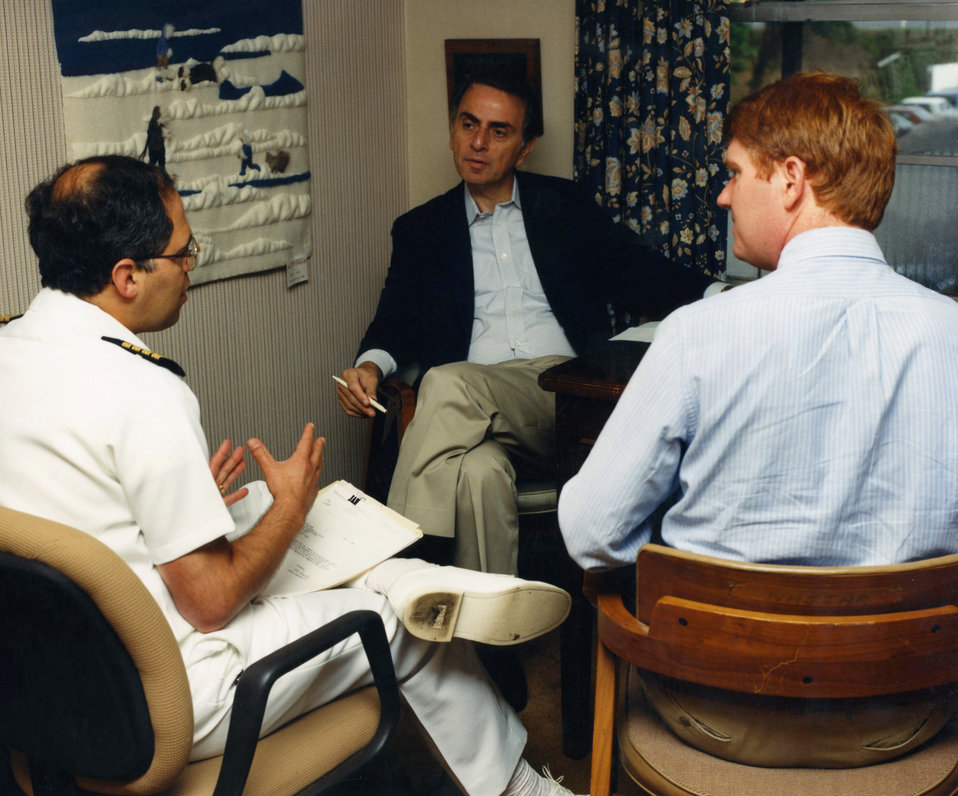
This photograph shows Professor Carl Sagan of Cornell University as he meets with two CDC employees at the Roybal Campus in Atlanta, Georgia.